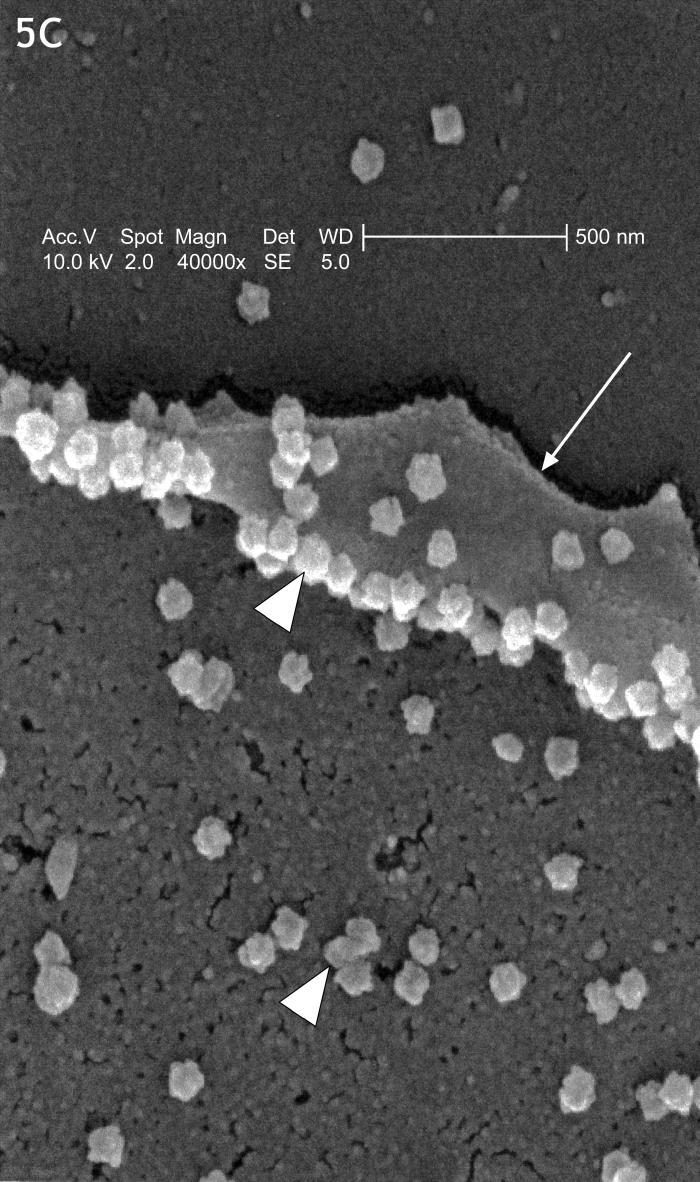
This scanning electron micrograph (SEM) revealed the thickened, layered edge of SARS infected Vero E6 culture cells.